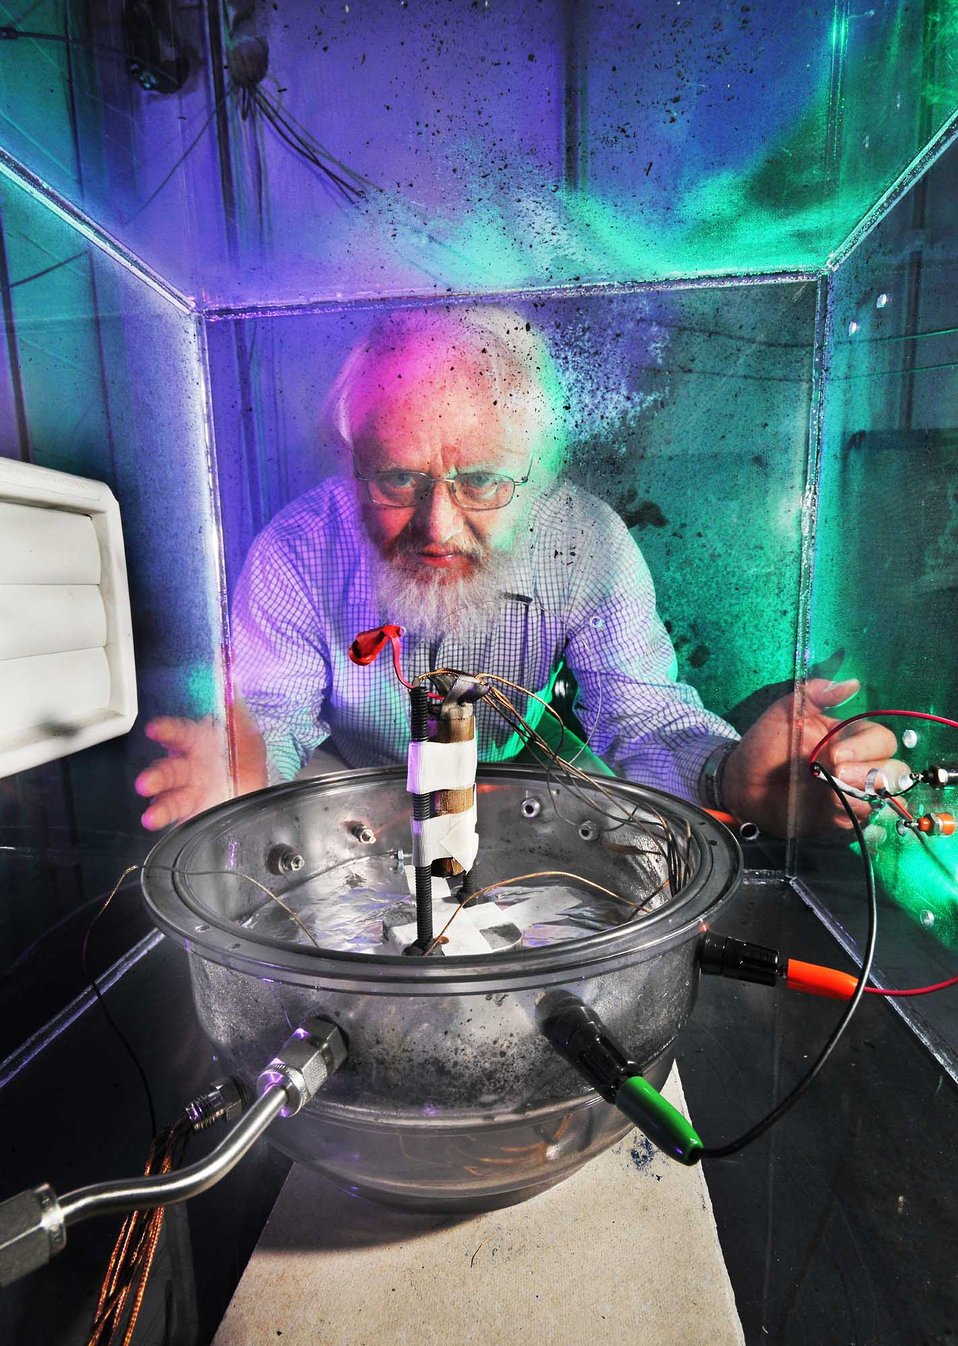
Sandia researcher at the Battery Abuse Testing Laboratory (BATLAB).

Sandia's Battery Abuse Testing laboratory is internationally recognized as a leader in the field of battery testing to ensure they meet real-world performance requirements. Their goal is developing low-cost batteries for electric and plug-in hybrid vehicle.